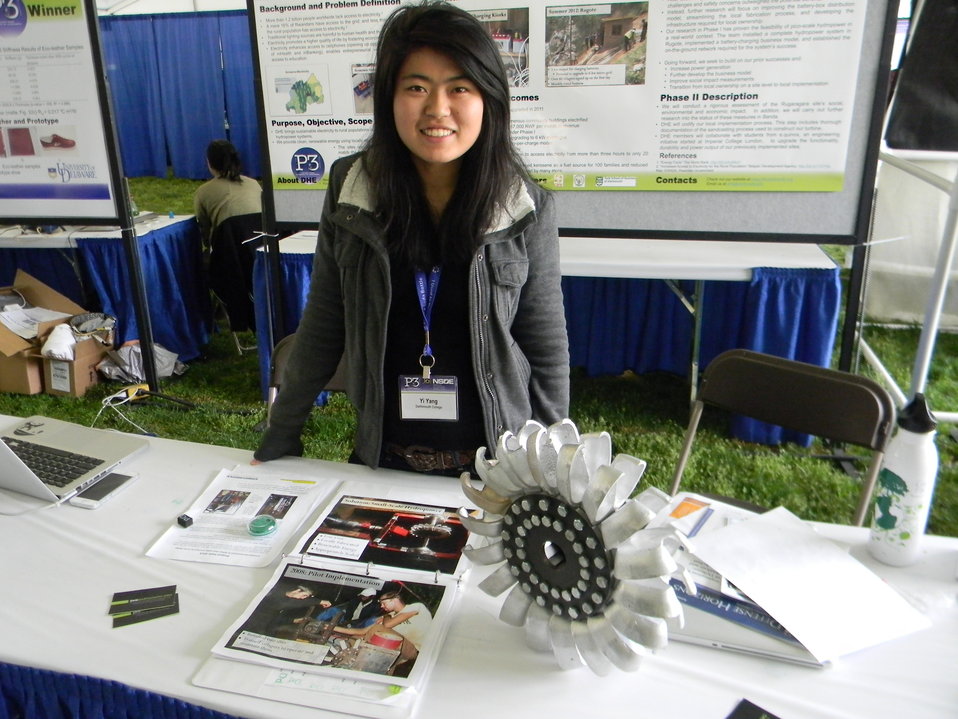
April 19, 2013 - P3 Design Expo, Dartmouth College

Dartmouth team member with the turbine she and her Dartmouth teammates designed to generate hydroelectric power. This turbine is used by the small-scale hydropower machine in Rwandan villages to generate energy.

Dartmouth P3 page
Dartmouth Team Facebook Page

People Prosperity and the Planet: National Sustainable Design Expo on the National Mall 18-19 April 2013